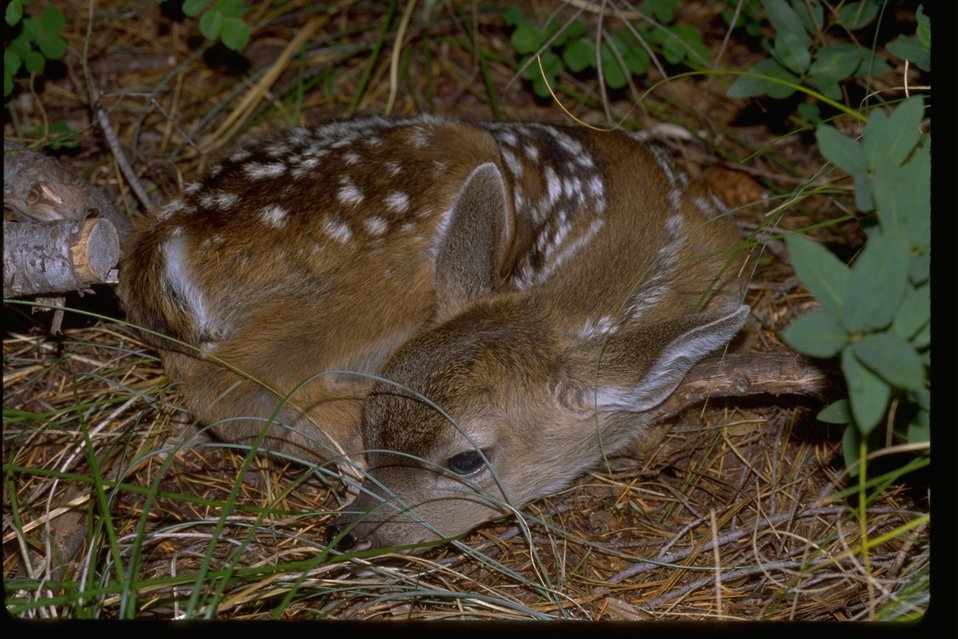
Deer, fawn, with small spots lying on the ground.